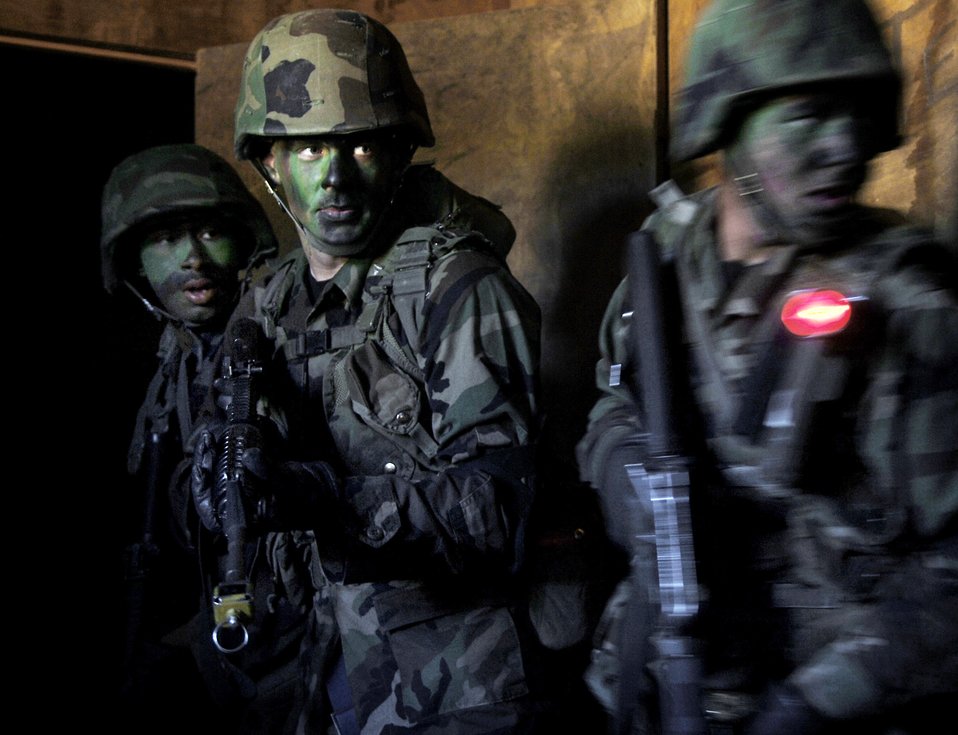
Military ops

LACKLAND AIR FORCE BASE, Texas (AFPN) -- (From left) Airmen Jason Sumlin, Steven Schepel and Wayne Stickles use proper room-clearing tactics during security forces technical training here Jan. 30. This three-week portion of their training familiarizes Airmen with concepts and tactics used in basic military operations in urban terrain.